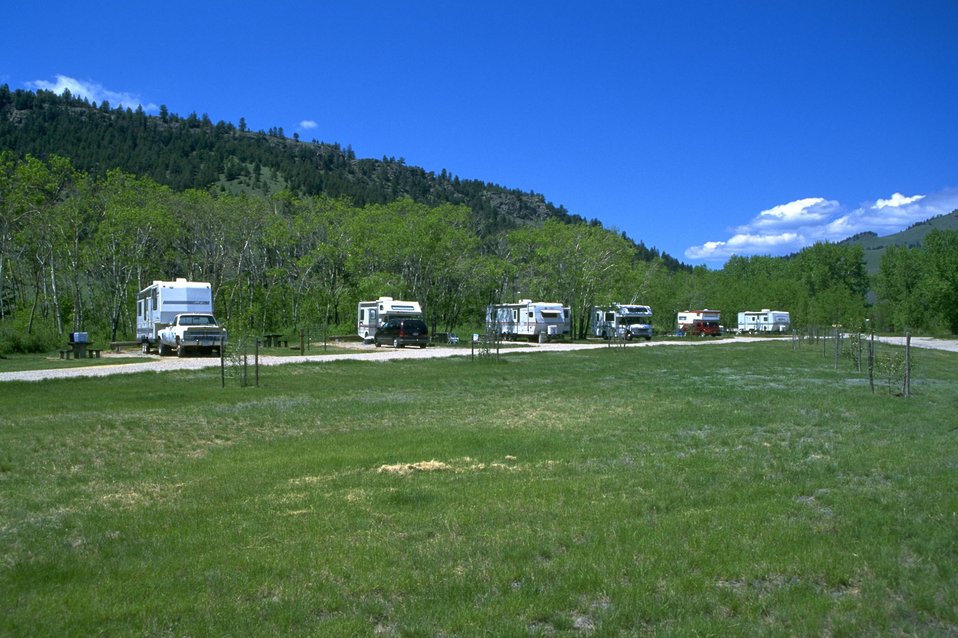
Campers at Divide Campground